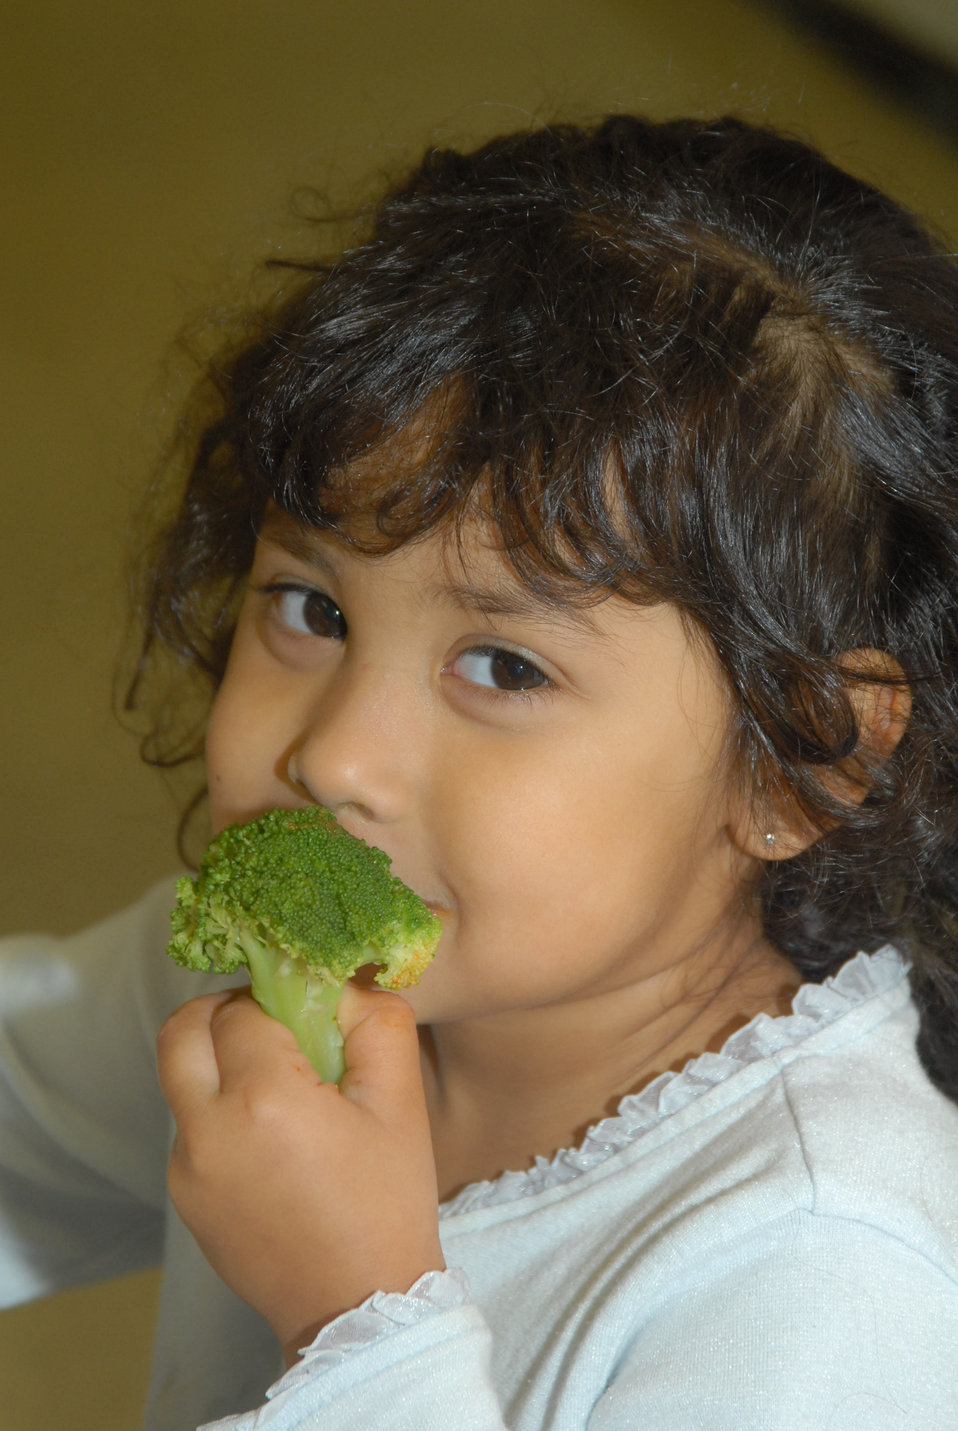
Youngsters at the Higher Horizons Day Care Center in Bailey Crossroads, VA., receive healthy food and snacks on October 25, 2006 under the U.S. Department of Agriculture (USDA) Food Nutrition Service’s (FNS) Child and Adult Care Food Program (CACFP) and Head Start program. CACFP plays a vital role in improving the quality of day care for children and elderly adults by making care more affordable for many low-income families. Each day, 3.2 million children receive nutritious meals and snacks through CACFP.